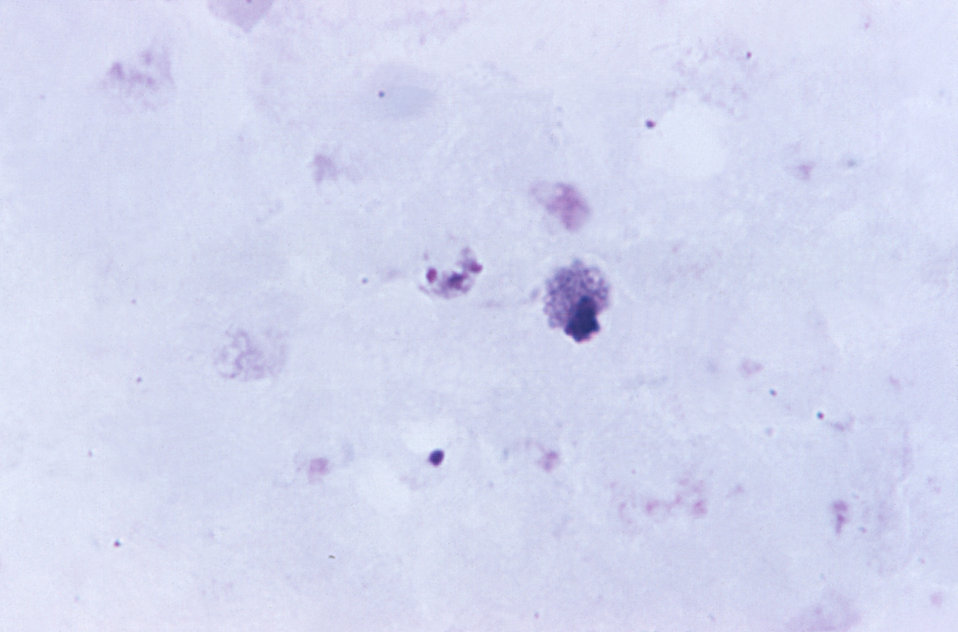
Magnified 1125X, this thick-film, Giemsa-stained photomicrograph revealed the presence of an immature Plasmodium malariae schizont (cntr), which is situated to the left of an eosinophile.